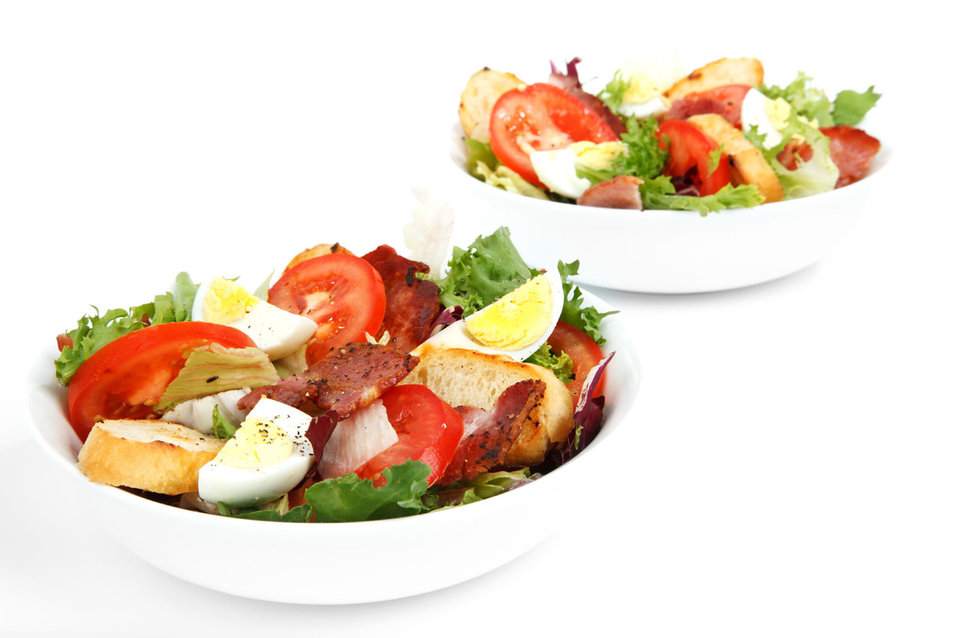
Fresh salad in bowl

Fresh composed salad in bowl isolated on white background.